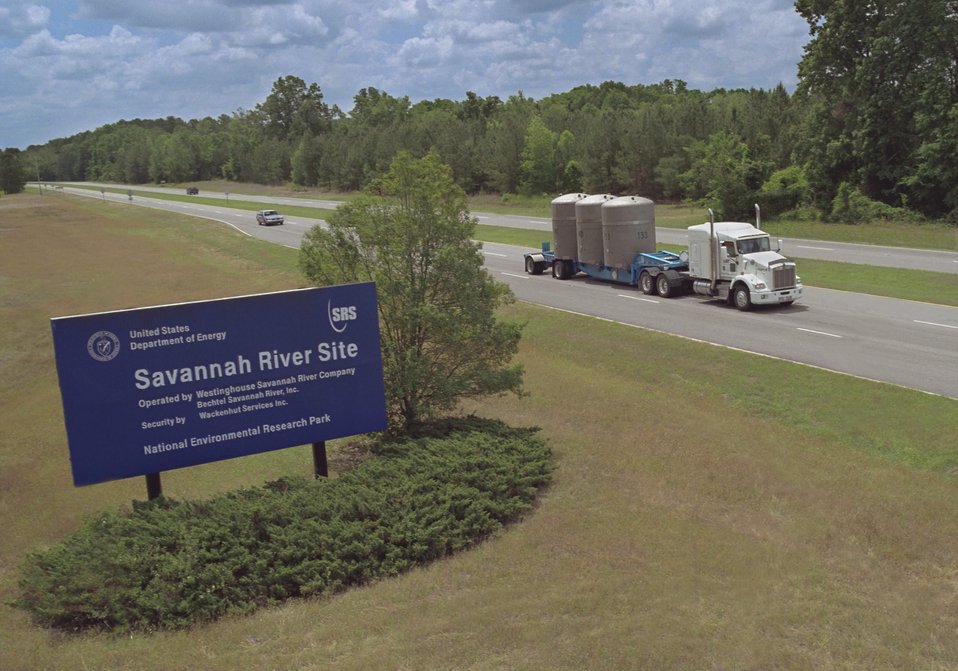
THE FIRST SHIPMENT OF TRU WASTE SENT TO WIPP FROM THE SAVANNAH RIVER SITE, MAY 8, 2001.

THE SAVANNAH RIVER SITE HAS MADE SHIPMENTS OF TRU WASTE TO THE WASTE ISOLATION PILOT PLANT, A GOVERNMENT REPOSITORY IN CARLSBAD, NM. WIPP IS A GEOLOGICAL REPOSITORY SPECIFICALLY CONSTRUCTED FOR THE PERMANENT DISPOSAL OF TRU WASTE, INCLUDING CLOTHING, TOOLS, RAGS, RESIDUES, DEBRIS AND OTHER ITEMS CONTAMINATED WITH SMALL QUANTITIES OF RADIOACTIVE ELEMENTS.